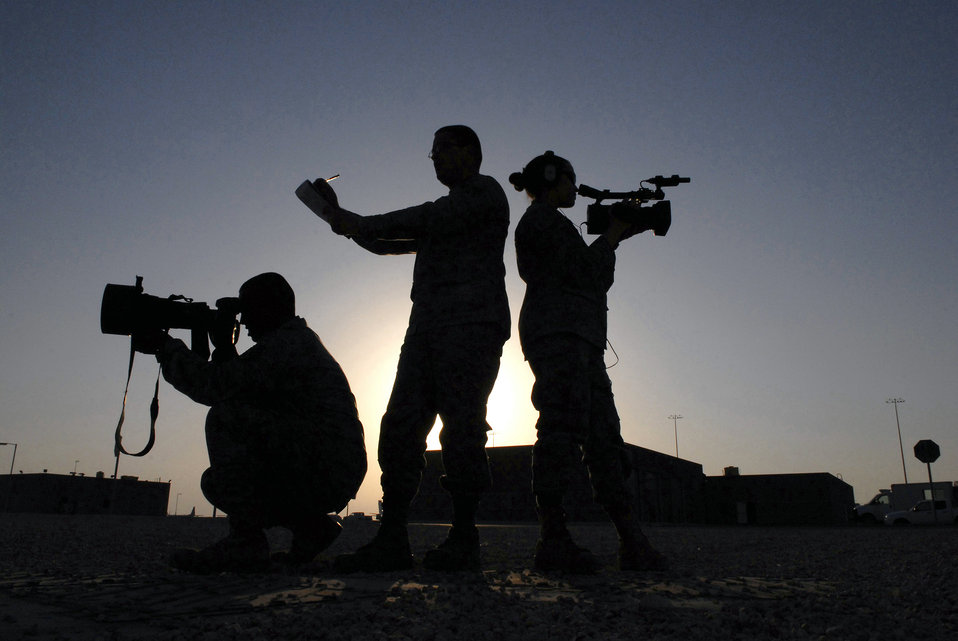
Public affairs angels

At a forward location in Southwest Asia, Staff Sgt. Joshua Garcia (left to right), photographer; Senior Airman Brok McCarthy, journalist and Senior Airman Jennifer Herring, broadcaster; show the three areas of a deployed Public Affairs team. All are assigned to the 379th Air Expeditionary Wing.